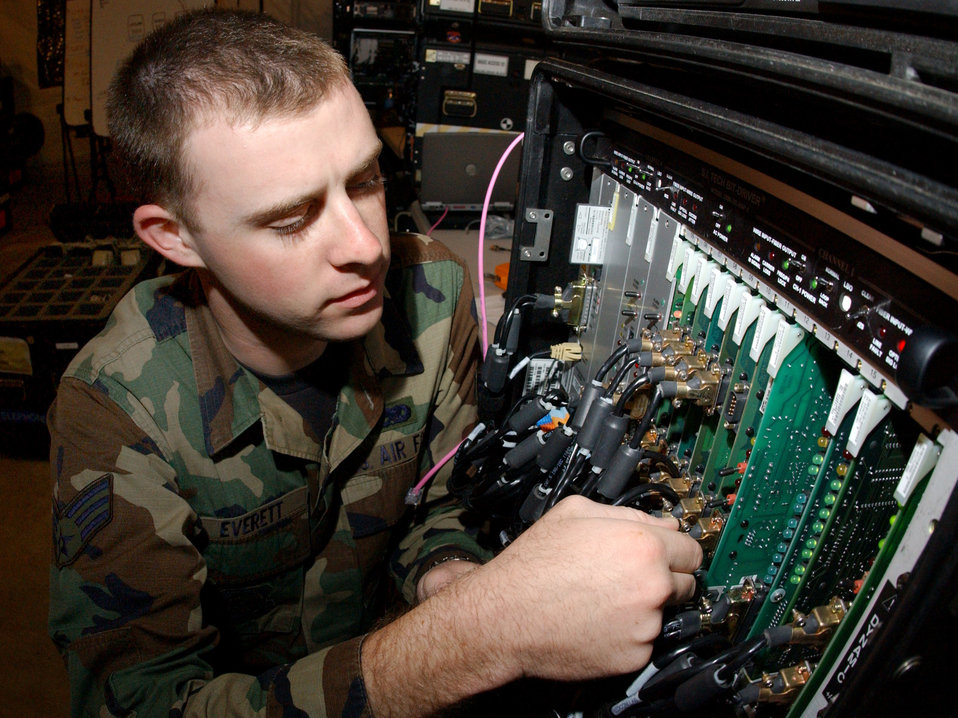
Jump Start

Senior Airman Scott Everett ensured that voice and data are working during Exercise Jump Start on Thursday, April 13, 2006, at Homestead Air Reserve Base, Fla. The communications exercise is designed to familiarize troops from Reserve, Guard and active military units with equipment they wouldn't normally use. Airman Everett is a computer, cryptographic and switching systems technician with the 452nd Communications Squadron at March ARB, Calif.